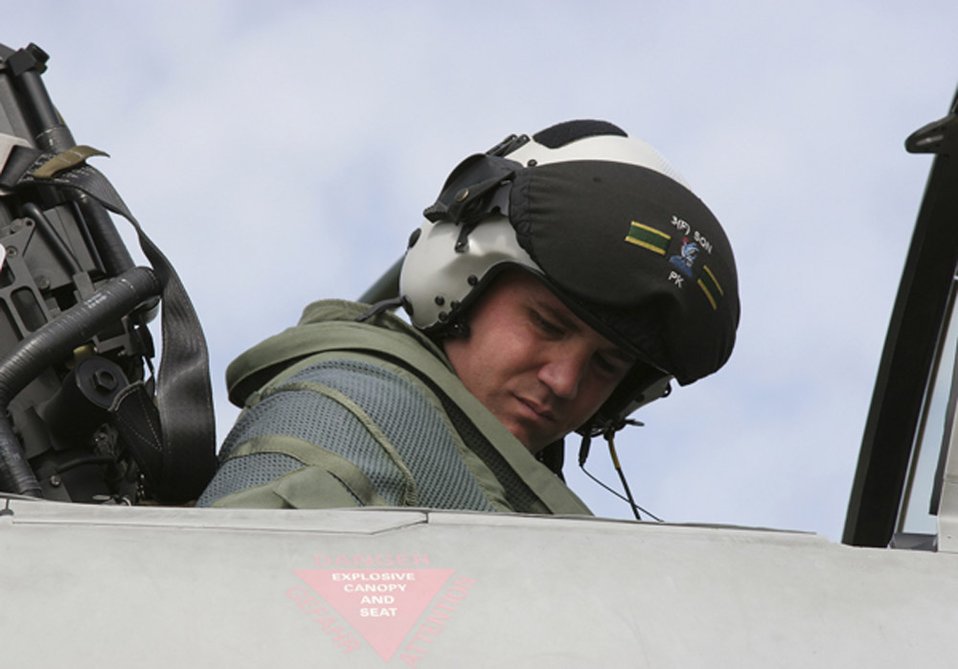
Pilot tackles Typhoons during exchange duty in England

Maj. Paul Carlton straps himself into an F-2 Typhoon June 16 at Royal Air Force Coningsby, England. Major Carlton is an F-16 Fighting Falcon pilot on an exchange program.